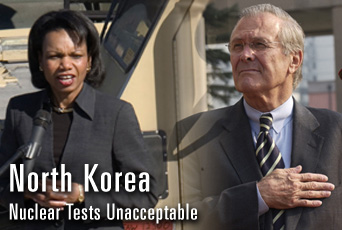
Rice, Rumsfeld agree North Korea nuclear tests must stop

Secretary of State Condoleezza Rice and Defense Secretary Donald H. Rumsfeld speak out against the North Korean nuclear tests.